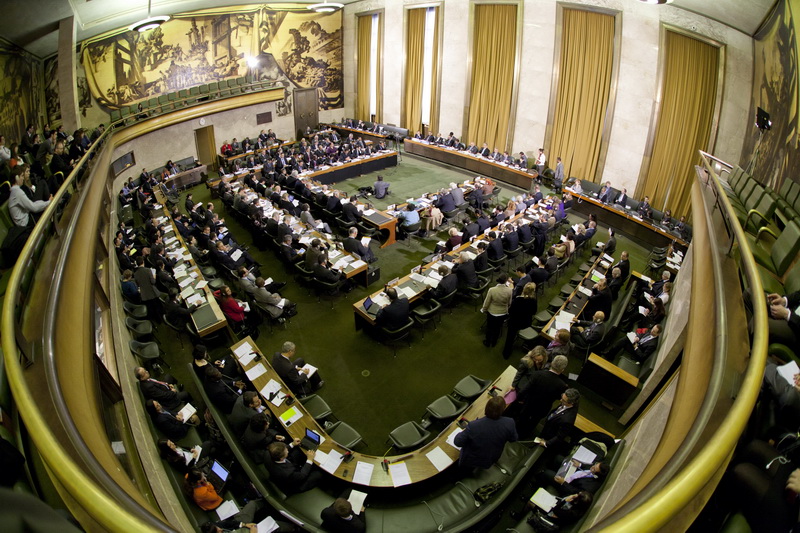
Assistant Secretary Gottemoeller Delivers the Opening Statement

Rose E. Gottemoeller, Assistant Secretary of State for Arms Control, Verification and Compliance, delivers the opening statement for the United States at the First Plenary of the 2012 Session of the Conference on Disarmament in Geneva, Switzerland, on January 24, 2012.